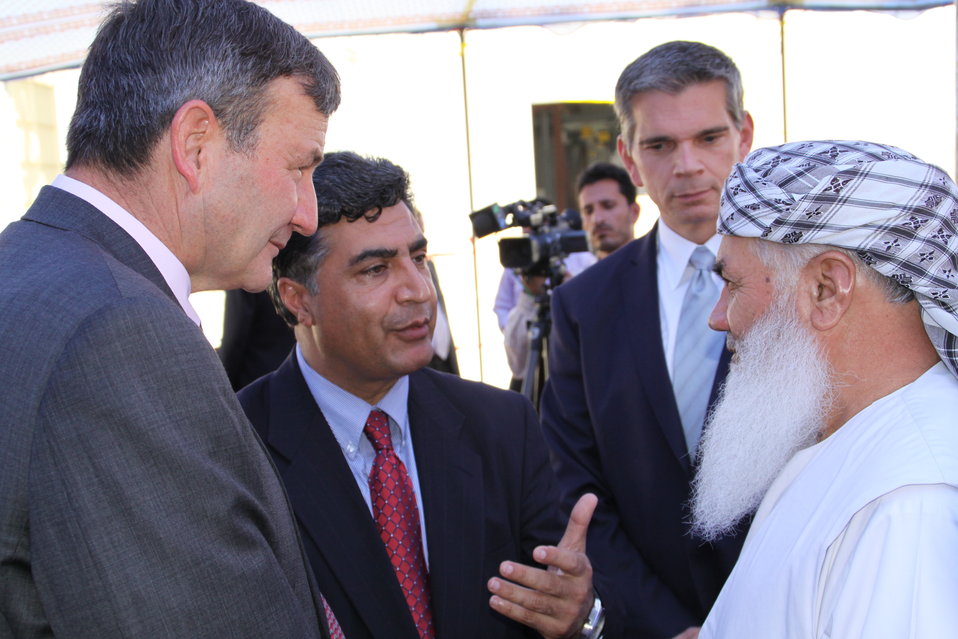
105 MW Tarakhil Power Plant Handover